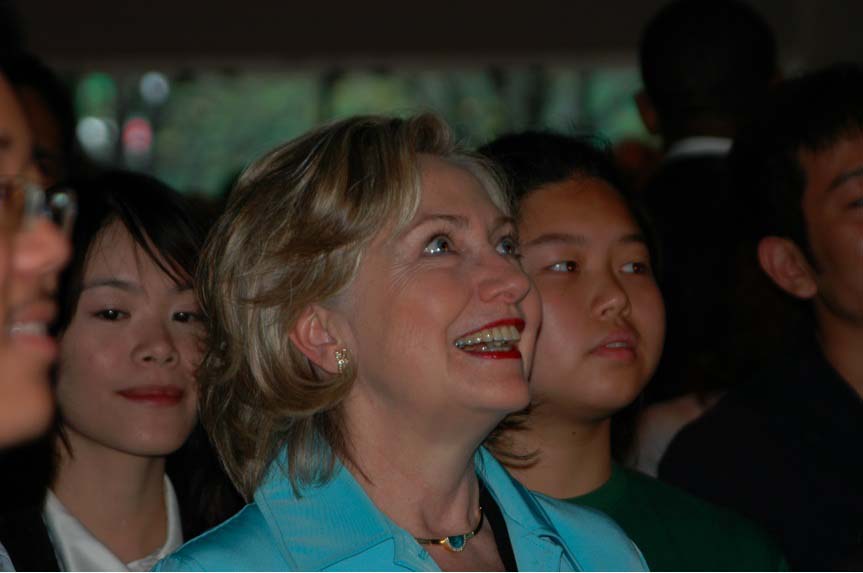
Secretary Clinton Observes Action at USA Pavilion

U.S. Secretary of State Hillary Rodham Clinton observes action at the USA Pavilion, part of the 2010 World Expo in Shanghai, China, May 22, 2010.